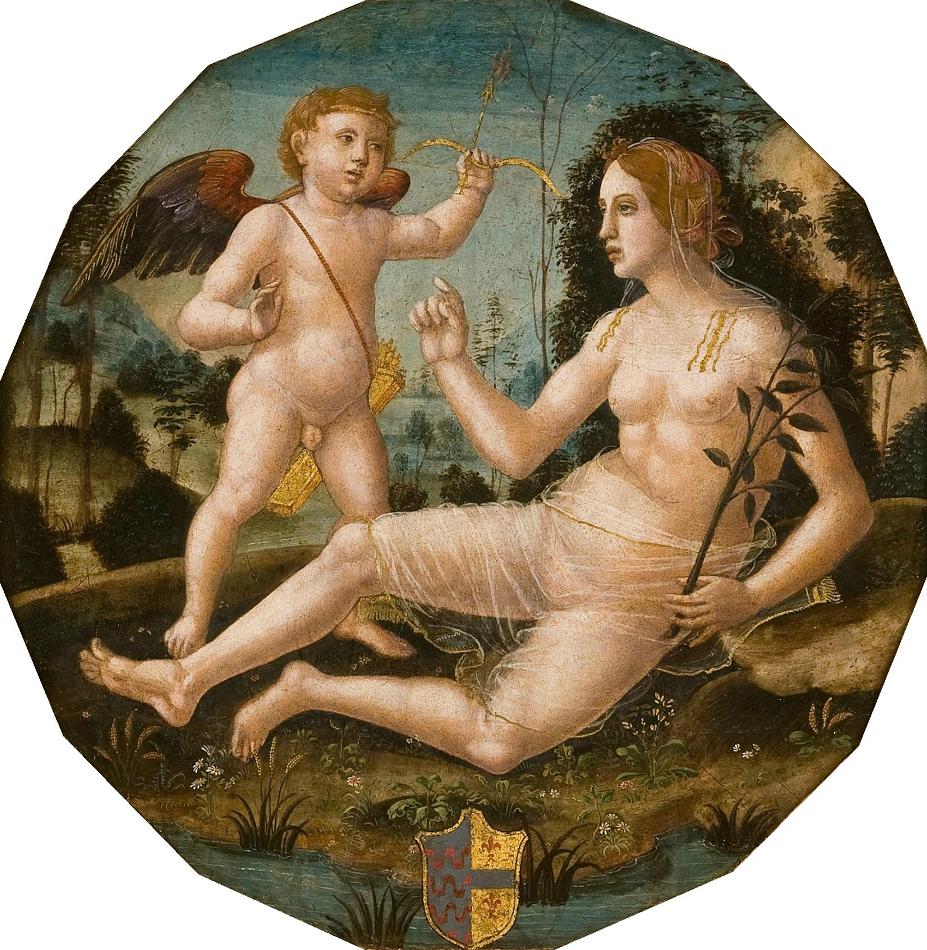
'Venus with Cupid', painting by Girolamo di Benvenuto